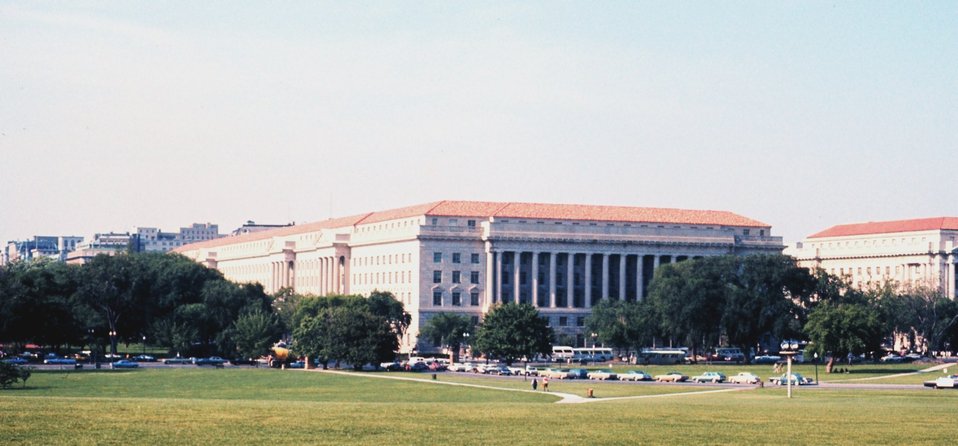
The Herbert Clark Hoover Building, home to the U. S. Department of Commerce, parent agency to NOAA.